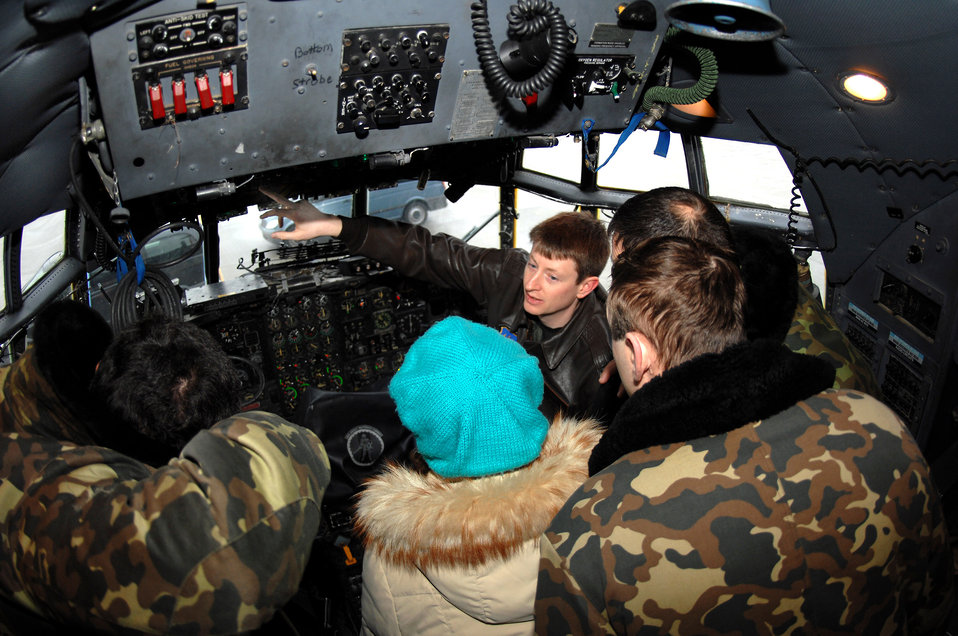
Russians, Americans team up in Germany

Capt. Chris Dorough explains the C-130 Hercules cockpit to Russian air force officers and their U.S. embassy interpreter Dec 5 at Ramstein Air Base Germany. The Russian air force members visited to plan a United States/Russia exercise demonstrating theater security cooperation among the U.S. Air Forces in Europe and Russian federation air force personnel. Captain Dorough is assigned to the 37th Airlift Squadron.